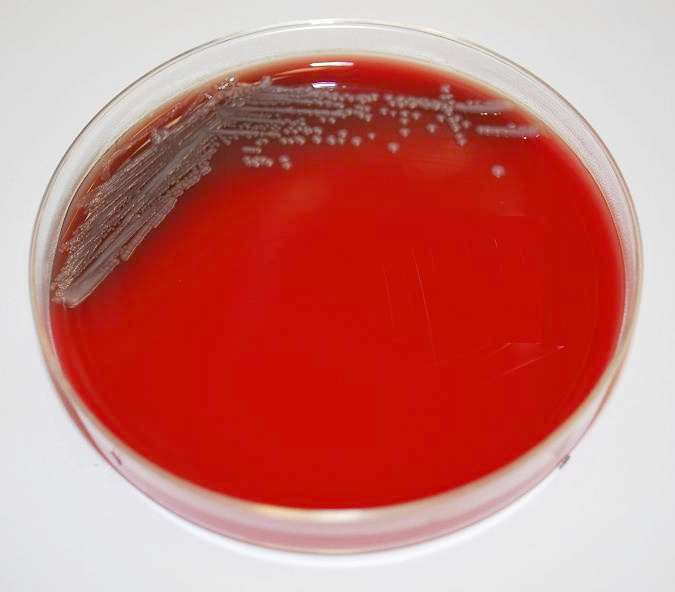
This image depicts a Petri dish containing a sheep's blood agar (SBA) medium, which had been inoculated with Gram-negative Yersinia pestis bacteria. Y. pestis is the pathogen responsible for causing human plague. This was the appearance of the colonial growth after 48 hours of incubation at 37� C.